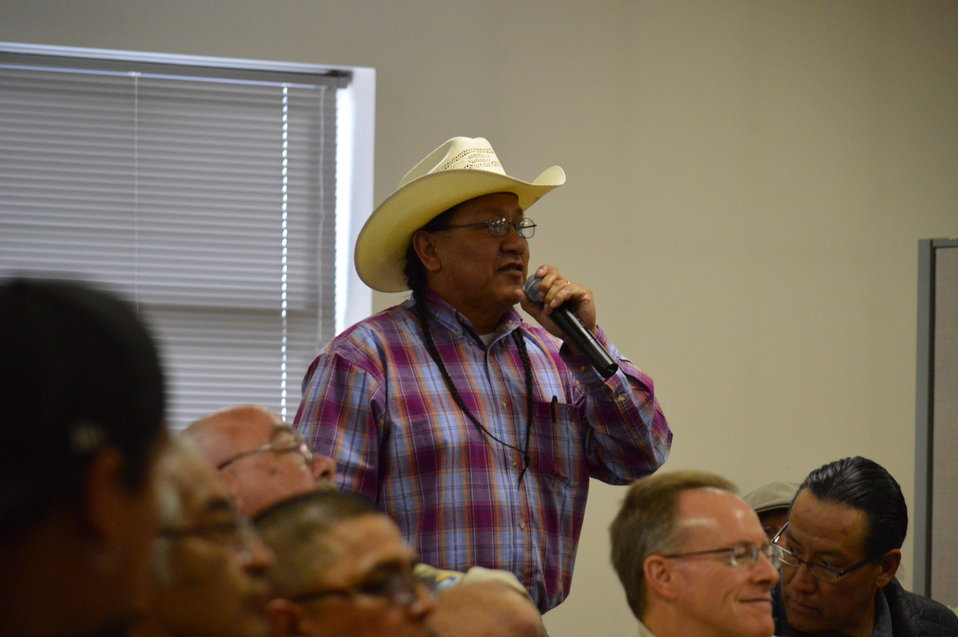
Eagle Summit III

Questions and comments are raised at the Eagle Summit III in Denver, Colorado on March 20, 2014 at the Rocky Mountain Arsenal National Wildlife Refuge.